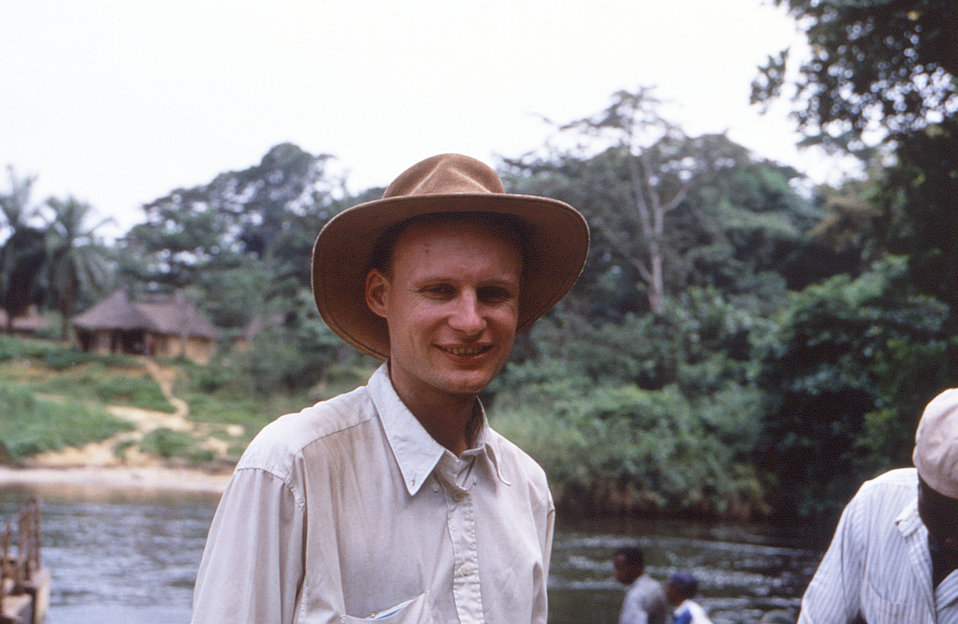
This image was created during an investigation into an outbreak of monkeypox, which took place in the Democratic Republic of the Congo (DRC), 1996 to 1997, formerly Zaire. This was Richard Peabody, from the European Programme for Intervention Epidemiology Training (EPIET), as he was taking a breather, while retreating from the town of Ekanga.